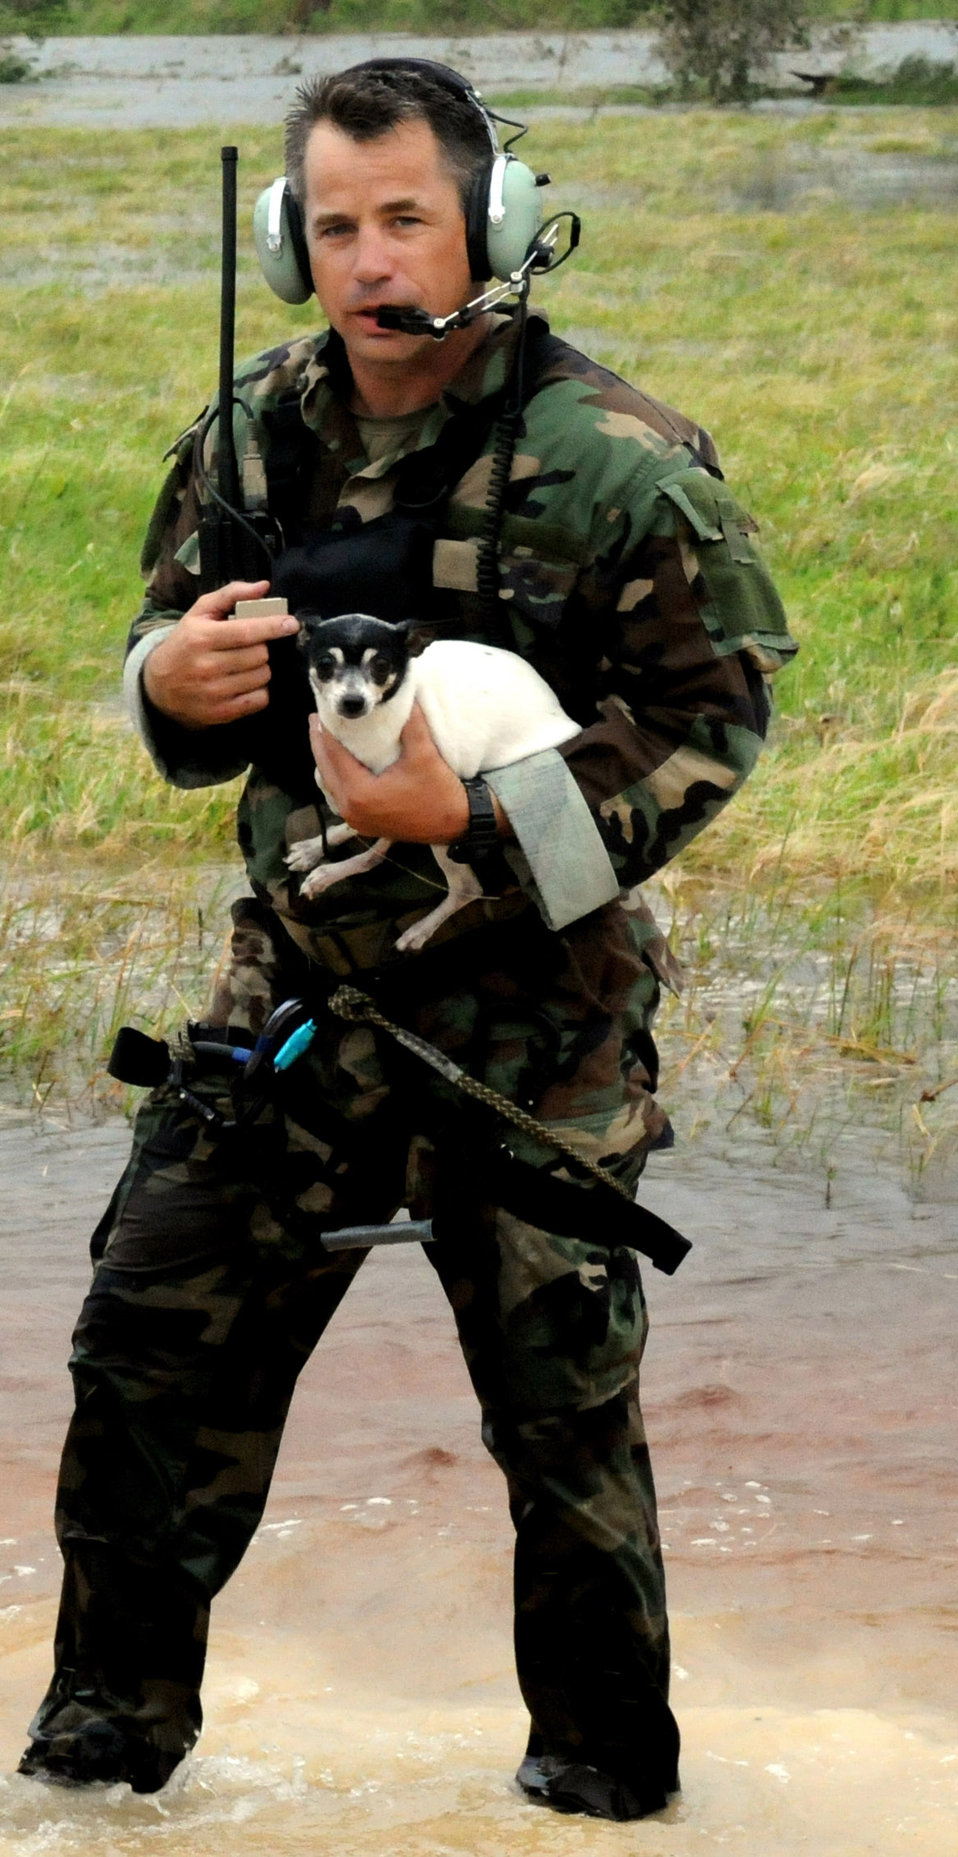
Airmen to the rescue

Master Sgt. Doug Kestranek, assigned to a 331st Air Expeditionary Group team who rescued people and pets from the flood waters of Hurricane Ike, brings a dog to safety Sept. 13 in Nederland, Texas. Sergeant Kestranek is an Air Force Reserve pararescueman assigned to the 920th Rescue Wing at Patrick Air Force Base, Fla.